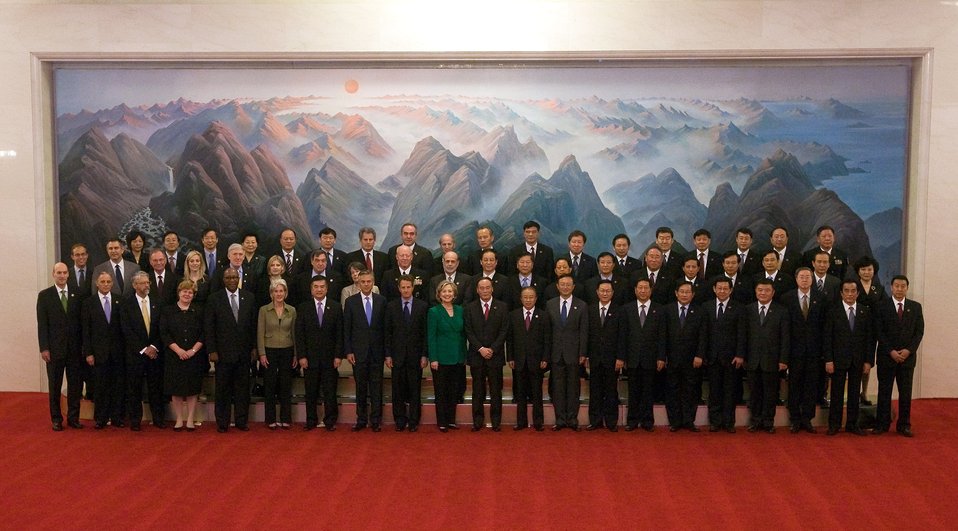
SandED, 5/24/10

S&ED Family Photo